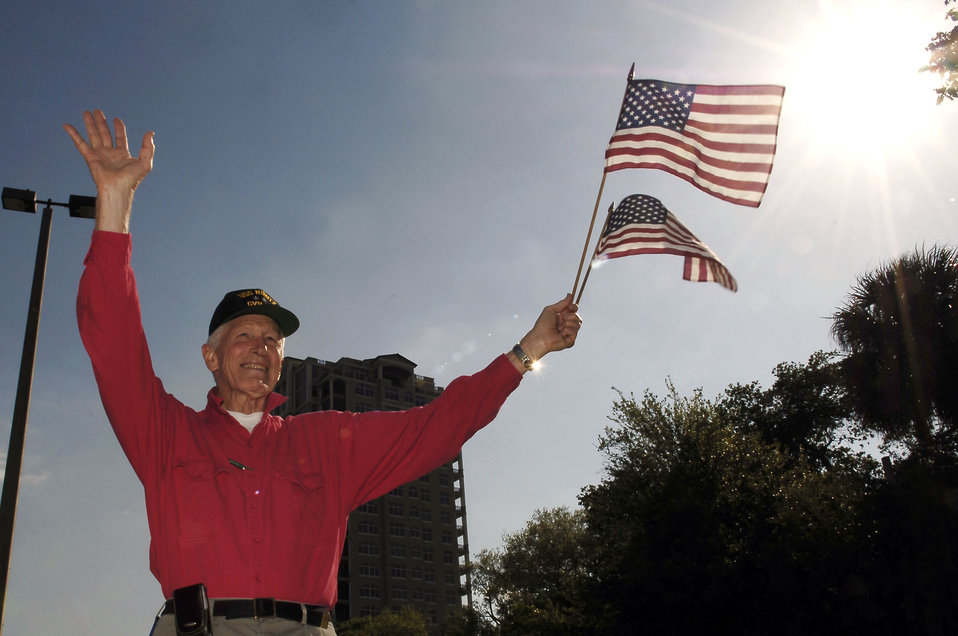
Patriots show their support

Retired Navy Rear Adm. Leroy Collins Jr. waves to military members March 21 at MacDill Air Force Base, Fla. Admiral Collins is a member of the Bayshore Patriots in Tampa. The patriots show their support to military members and their families by waving the American flag on one of the busy roads in Tampa. They consist of retired military and civilian members of the community.